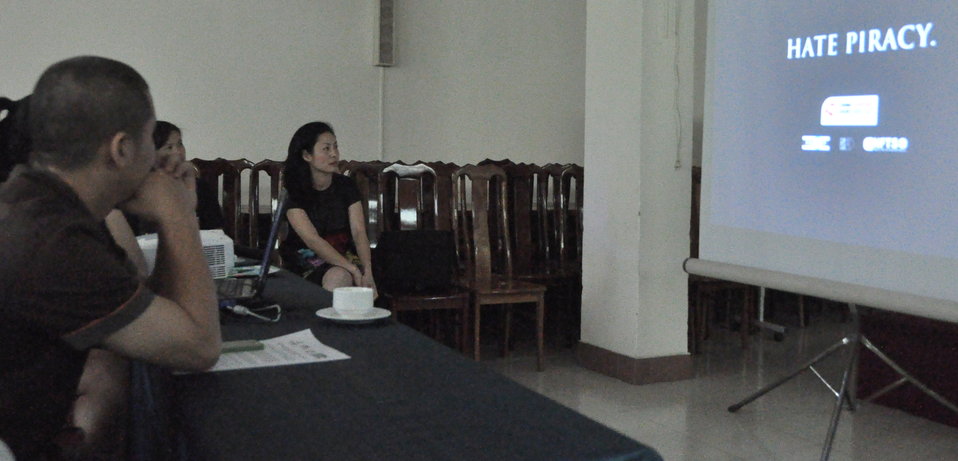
USAID supports scriptwriting contest for students in Hanoi to boost intellectual property rights awareness